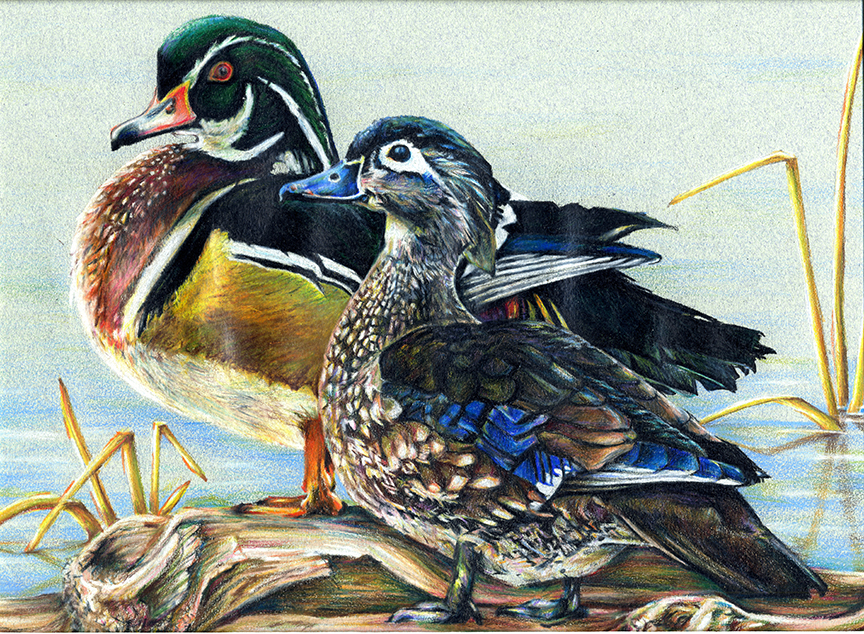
JRDuck2013NC

2013 Junior Duck Stamp Best of Show-North Carolina